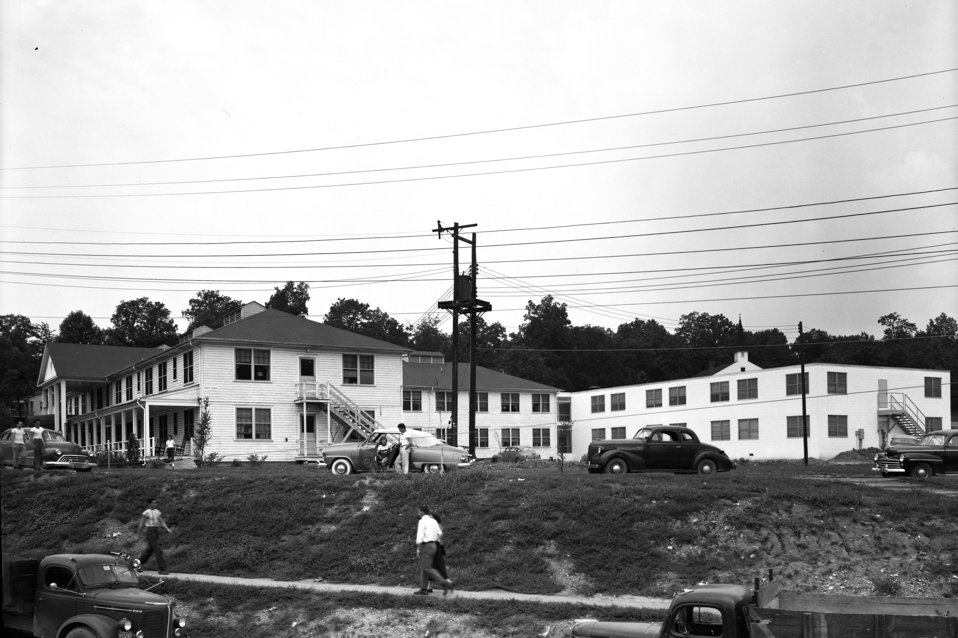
Guest House and Addition Oak Ridge 1949

5690-2 DOE photo Ed Westcott 8-19-1949 Oak Ridge Tennessee